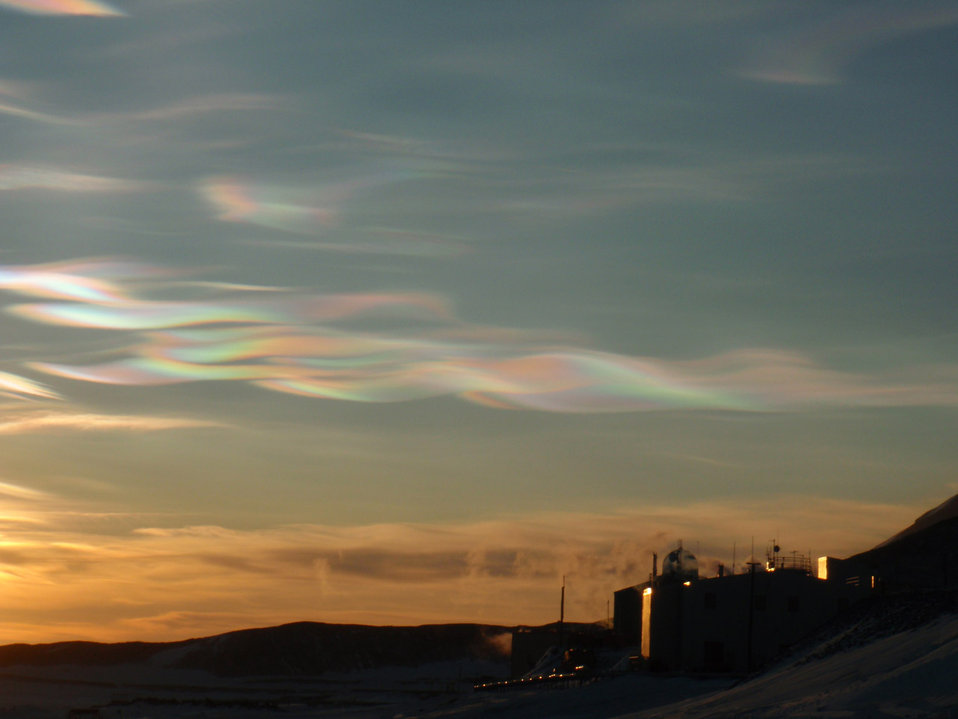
Nacreous clouds at mcmurdo

Nacreous clouds, which only appear in high latitudes at the end of winter, at mcmurdo station, antarctica.